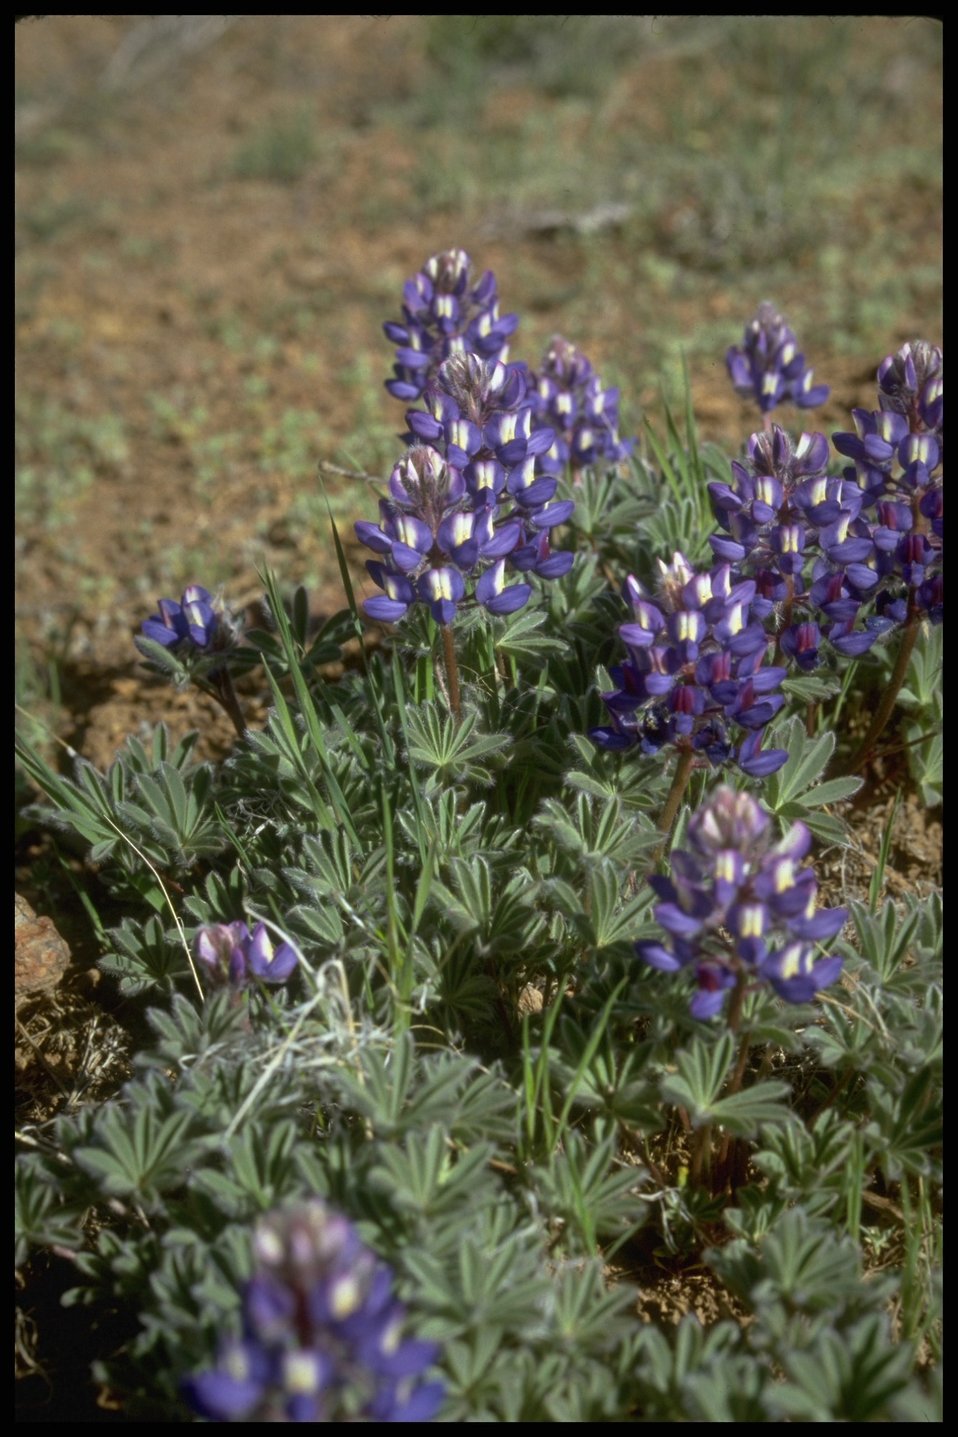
Medium shot of Lupine wildflower habitat, Lakeview District.